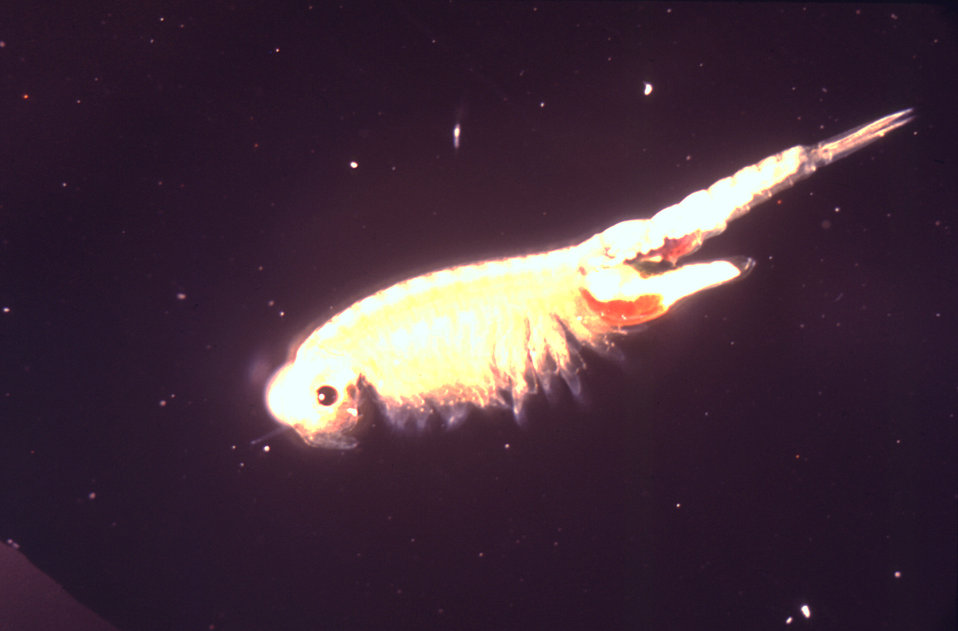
This image depicts a left lateral view of the crustacean known as the Stone Mountain fairy shrimp, Branchinella lithaca, that is only found inhabiting freshwater weather pools on Stone Mountain, a granite outcropping located in Dekalb County, Georgia.